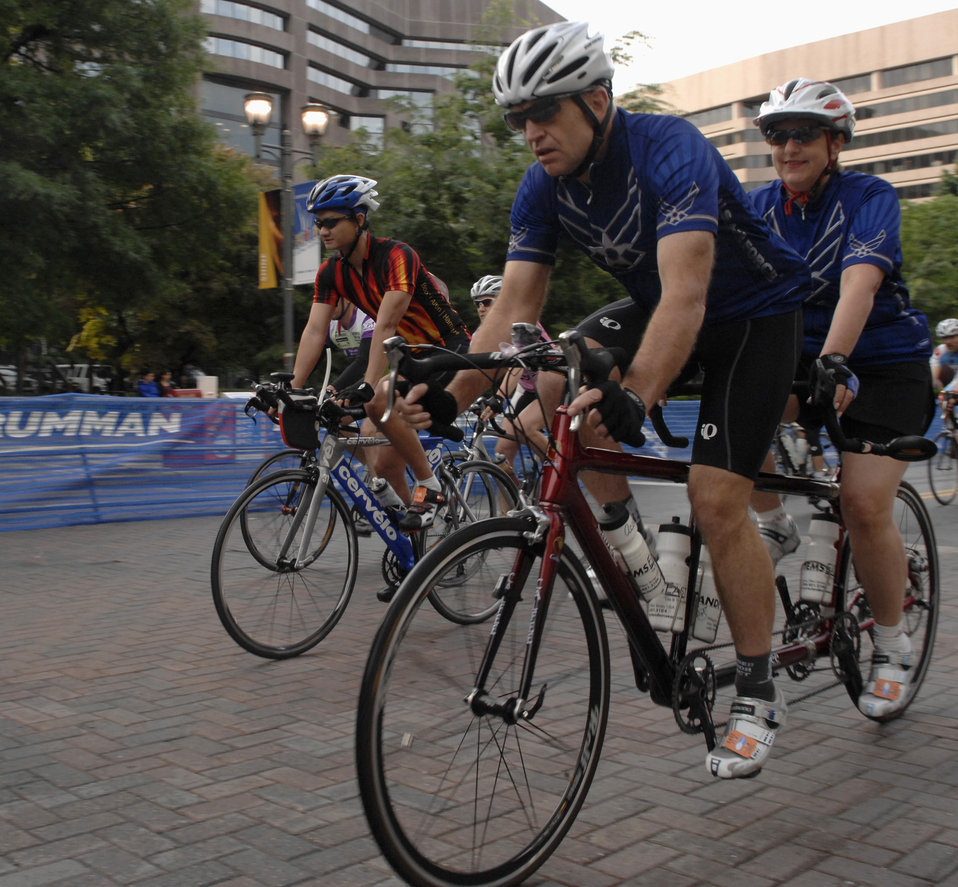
Bikers raise money for wounded warriors during Cycling Classic

Maj. Gen. Ralph J. Jodice II rides a tandem bike with his wife, Judy, May 31 during the 2009 Air Force Cycling Classic in Crystal City, Va. Nearly 1,000 professional and amateur cyclists participated in the annual, two-day bicycling event, raising $34,500 for the Intrepid Fallen Heroes Fund. General Jodice is the Air Force District of Washington commander.